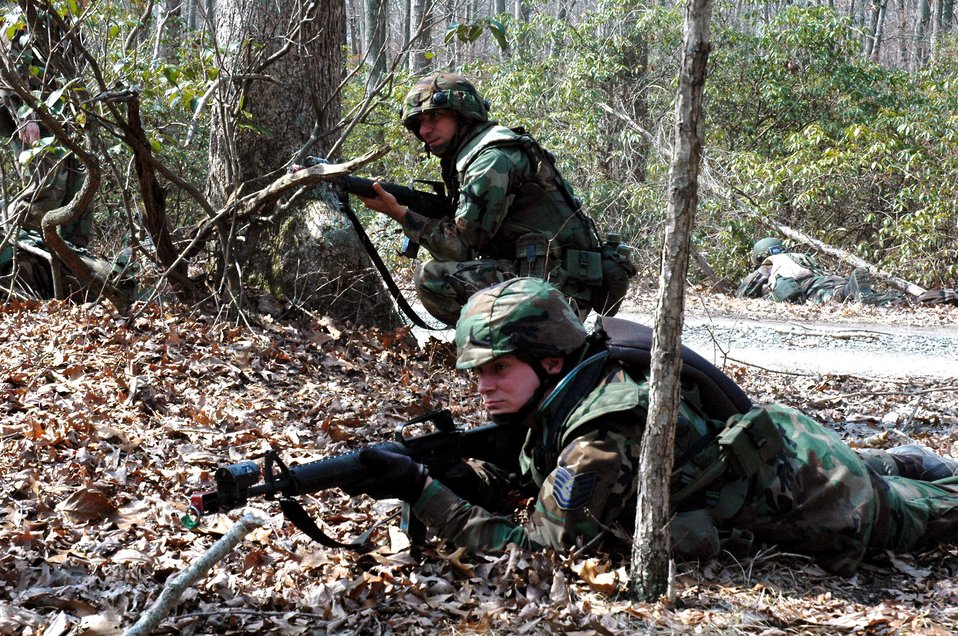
Fort Dix grinds combat mindset into Airmen

Airmen attending the Advanced Contingency Skills Training Course practice squad and fire team maneuvers on a range on Fort Dix, N.J. The course prepares Airmen for upcoming deployments through teaching areas such as deployment tactics, patrolling, convoy operations and self defense. The course is taught by the U.S. Air Force Expeditionary Center's 421st Combat Training Squadron.